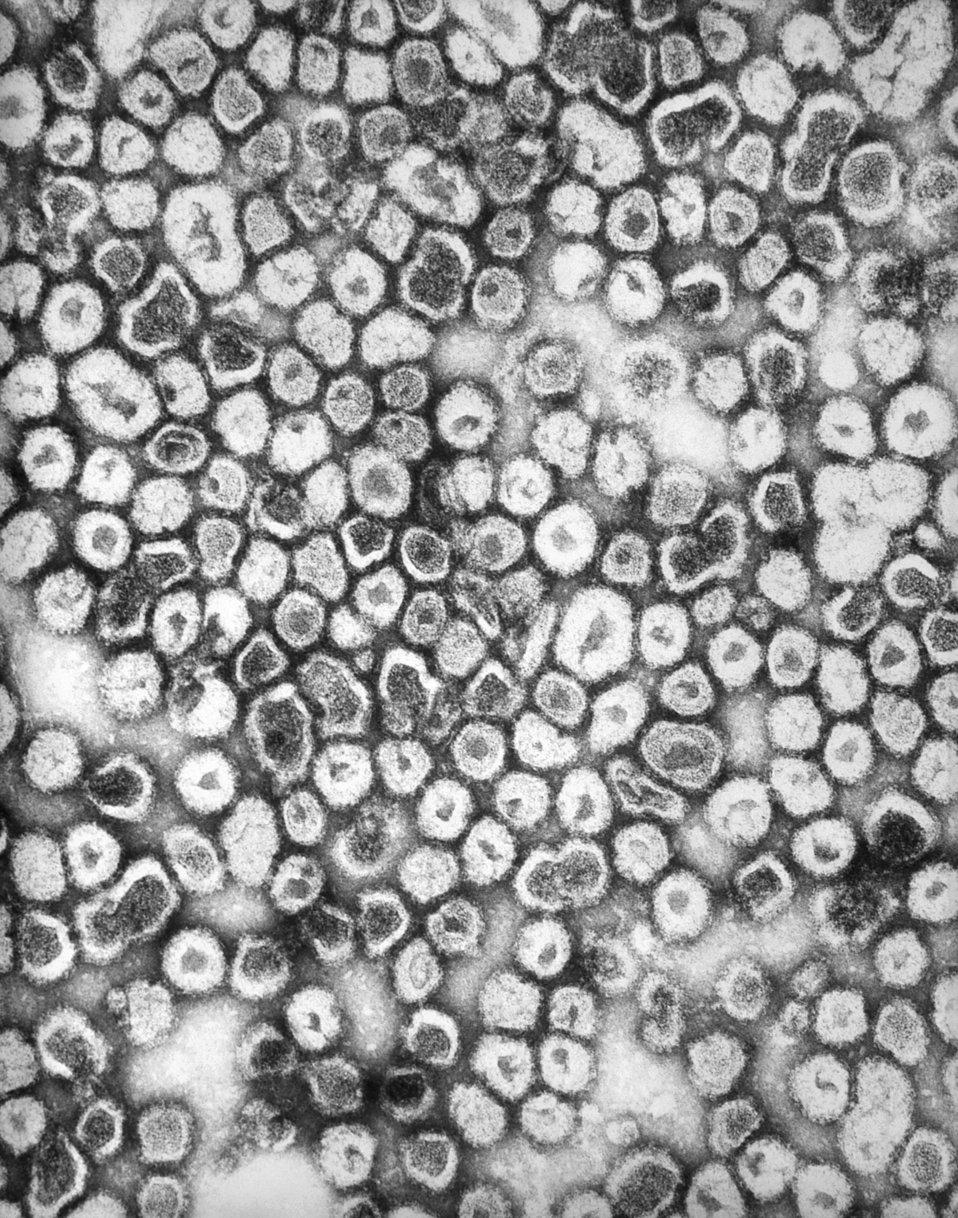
This negatively-stained transmission electron micrograph (TEM) revealed the presence of La Crosse (LAC) encephalitis virus ribonucleoprotein particles (RNP). LAC virus is a member of the Bunyaviridae virus family, California serogroup. This is an arbovorus, which means that transmission occurs through the bite of an infected arthropod, which in this case, is the treehole mosquito, Aedes triseriatus. LAC can also be transmitted through the bite of infected vertebrates including chipmunks and squirrels.